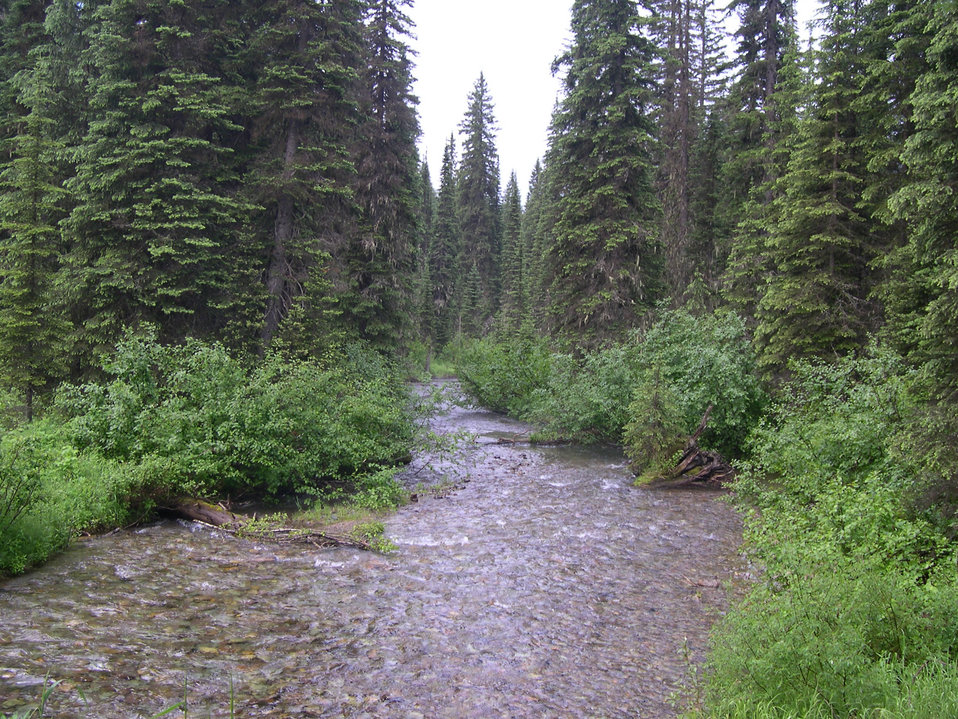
Bull Trout Habitat- Stillwater River, MT

Stillwater River is important habitat for the recovery and development of Bull Trout in southern Montana.